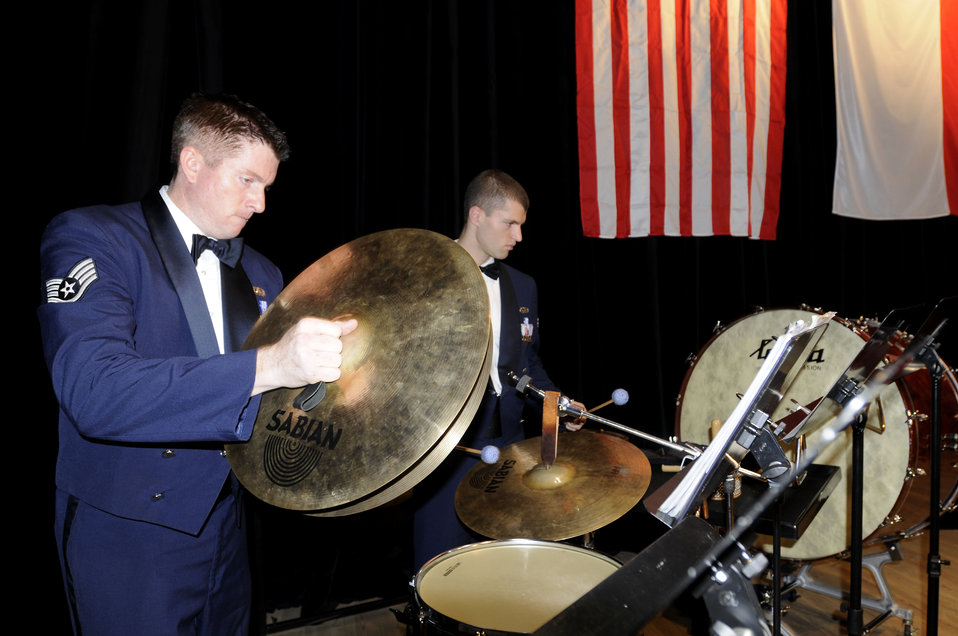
USAFE Band tours Poland

Staff Sgt Robert Browning (left) on the cymbals and Senior Airman Justin Trimble (right) on the suspended cymbal perform during the U.S. Air Forces in Europe Band's performance at the Cultural Center of the Pomeranian Military Ward Oct. 25, 2009, in Bydgoszcz, Poland. More than 2,500 people attended this concert series which commemorates 90 years of diplomatic relations between the United States and Poland.